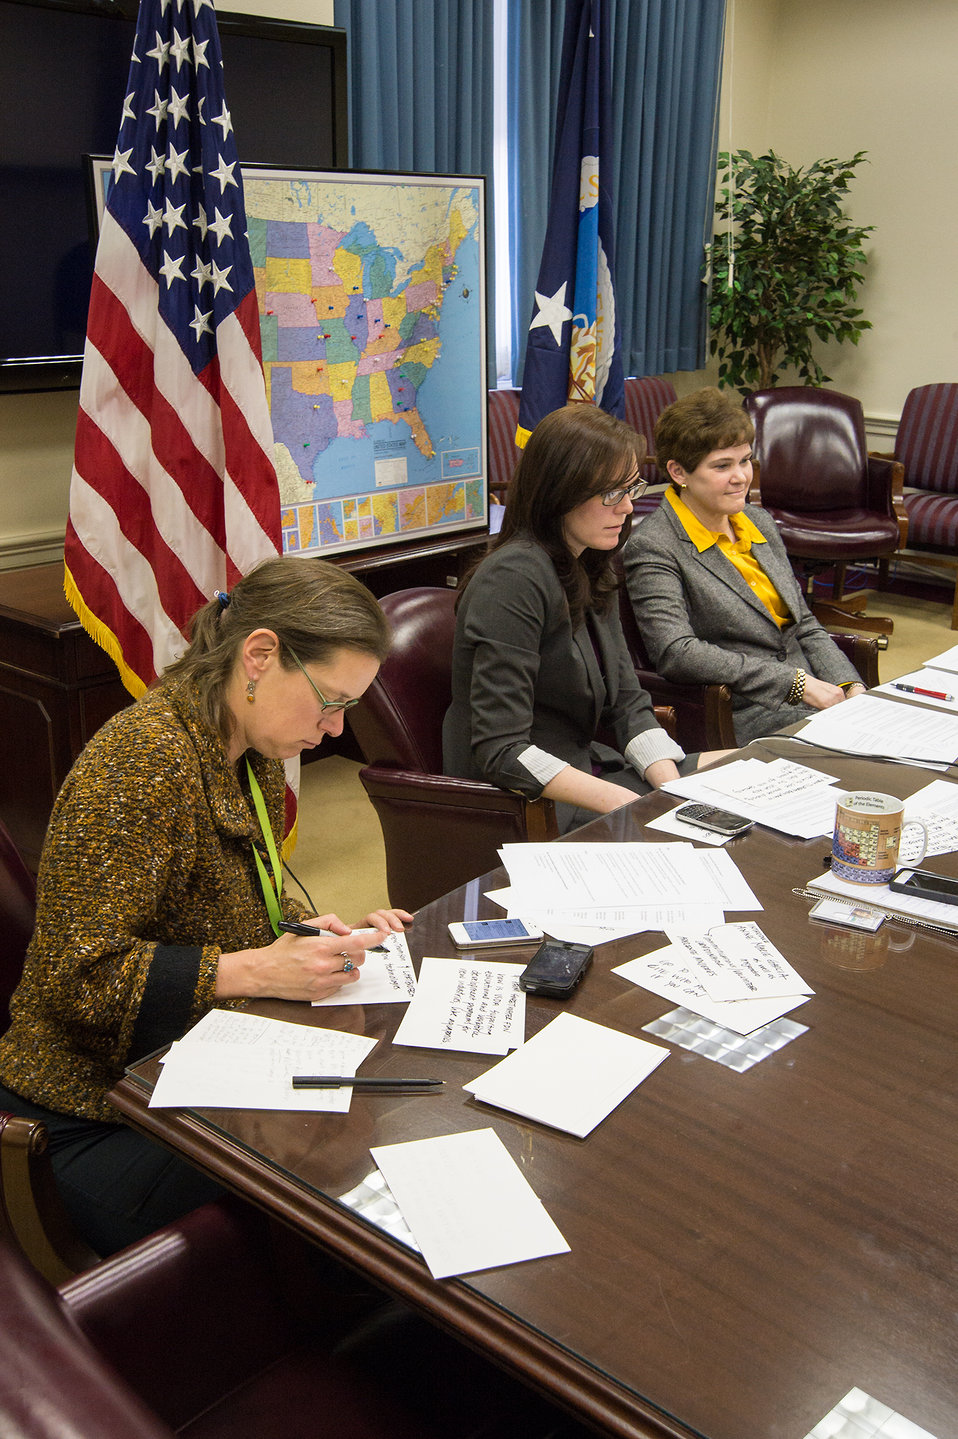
U. S. Department of Agriculture (USDA) Public Affairs Specialist Wendy Wasserman writes Twitter questions for Beginning New Farmer and Rancher Program Coordinator Lilia McFarland, and Agriculture Deputy Secretary Krysta Harden at a Goggle Hangout on USDA's commitment to new farmers to build the new generation of agriculture in Washington, D.C. on Monday, Feb. 24, 2014. Aledo IL corn and soybean farmer Kate Danner and Forest Grove, OR Mujeres farmers Alejandro Tecum, and Adelante participated online in the discussion. USDA Photo Bob Nichols